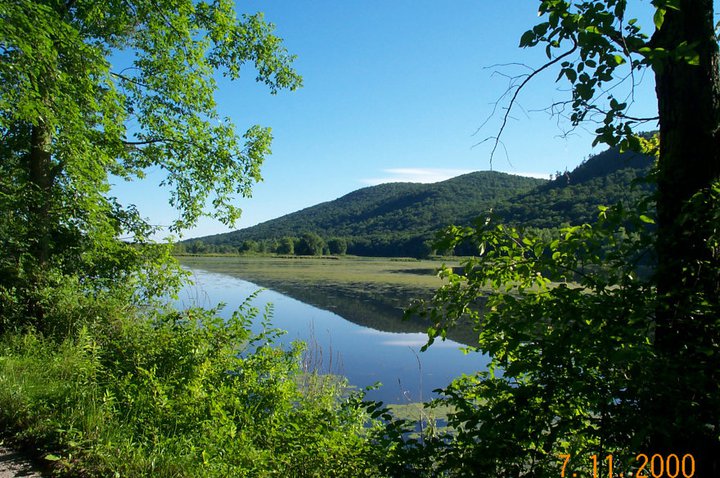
(Earlier photo) July 2000, View of Woods Pond, October Mountain

Woods Pond is at the southern end of EPA's Primary Study Area (included in 'Rest of River'). It is a popular pond for recreational fishing (catch & release only due to PCBs).